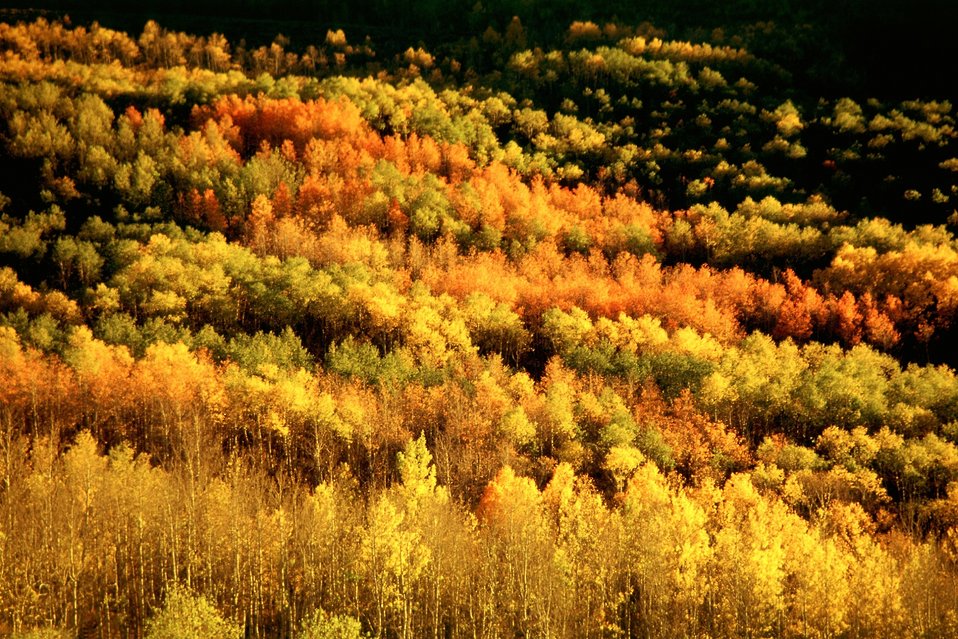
Aspens at sunset. Fish Creek, Steen's Mountain.